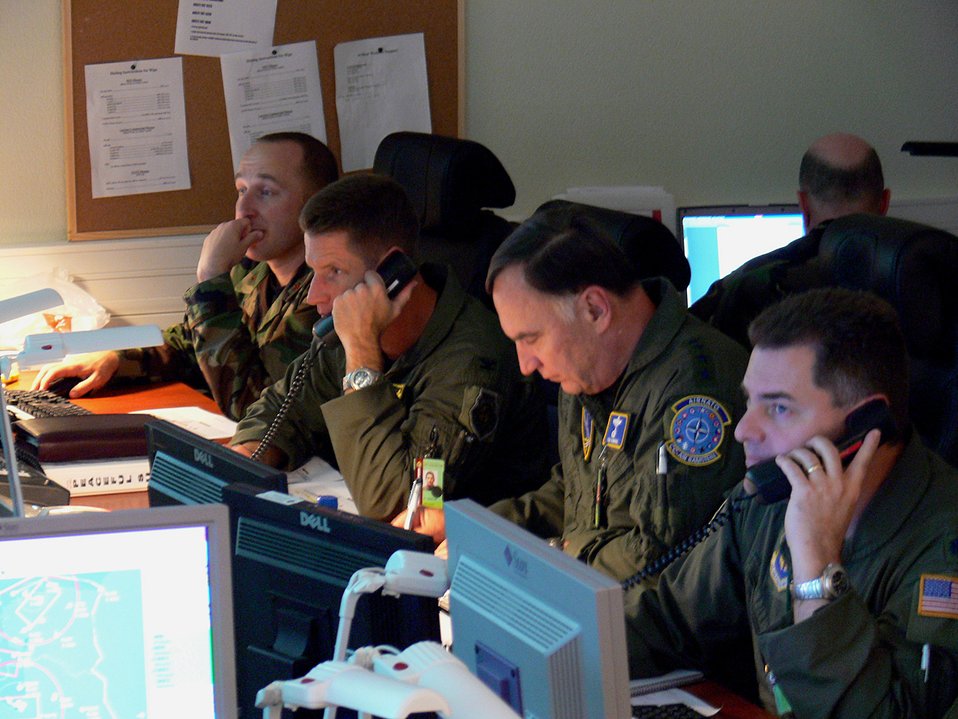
NATO team ensures safe sky during Riga Summit

Gen. William T. Hobbins (center right) leads the Combined Joint Air Operations Center team monitoring the skies over the Baltics during NATO's Riga Summit in Latvia Nov. 28 and 29. General Hobbins is the U.S. Air Forces in Europe commander and commander, NATO Air Component Command Ramstein. Others in the photo include, from left, Maj. B.J. Cottrell, legal advisor, Col. Pete Castor, 322 Air Expeditionary Group commander, and Lt. Col. David Jorgensen, NATO/U.S. watch advisor. Members from thoughout USAFE provided fighter, tanker, maintenance and communications support in seven countries, as well as staffing the Combined Joint Air Operations Center in Riga.